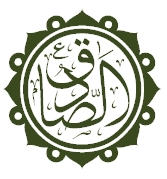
name of shite imam